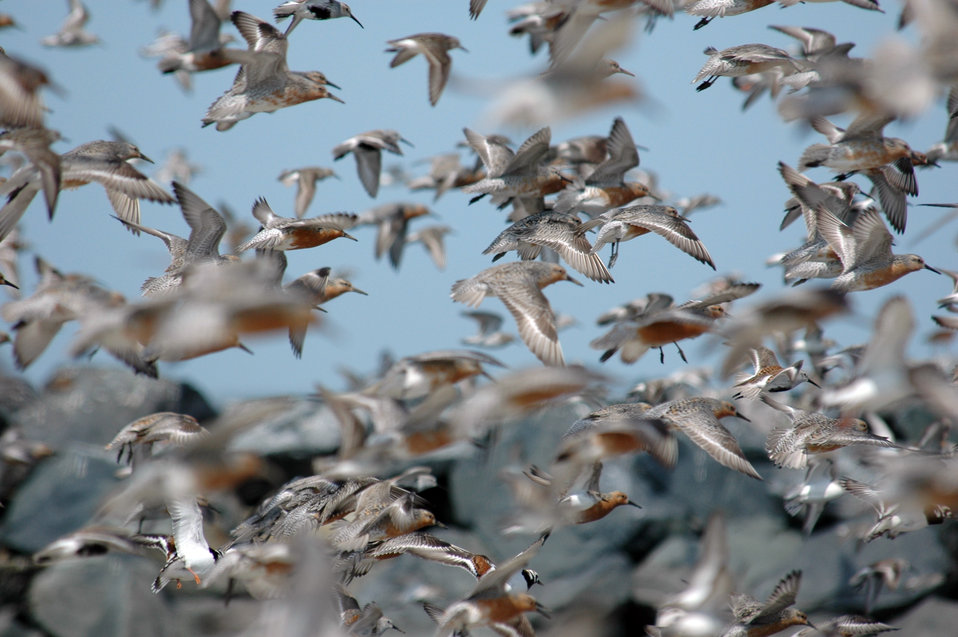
Red Knot

Mispillion Harbor, Delaware.